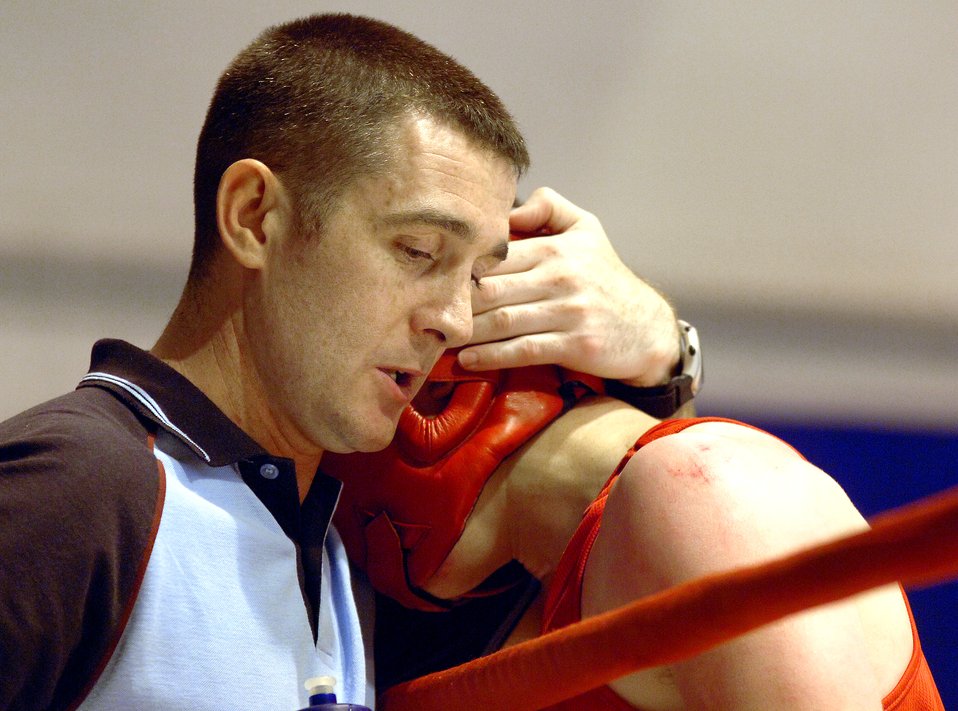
Boxing Royale

Royal Air Force Boxing Coach Cpl. Owen Spensley consoles RAF Senior Aircraftsman Chris Smyth after his loss to Gino Escamilla at the Boxing Royale at the Bennett Fitness Center in San Antonio on Saturday, June 10. The event featured RAF boxers competing against U.S. military and local boxers.